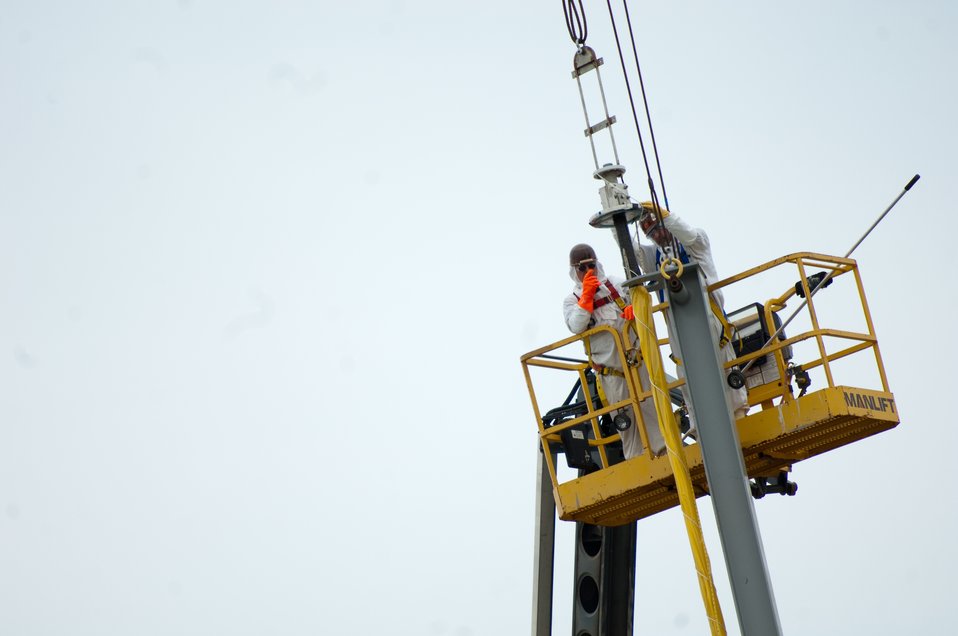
ORP Corrosion Probe Removal

Workers perched on a lift help remove a old corrosion probe and place a new one into one of Hanford’s double-shell tanks, an upgrade that is important to monitoring waste chemistry and potentially reducing the cost of treating tank waste. The new probe was built, assembled and installed with funds provided by the Recovery Act.